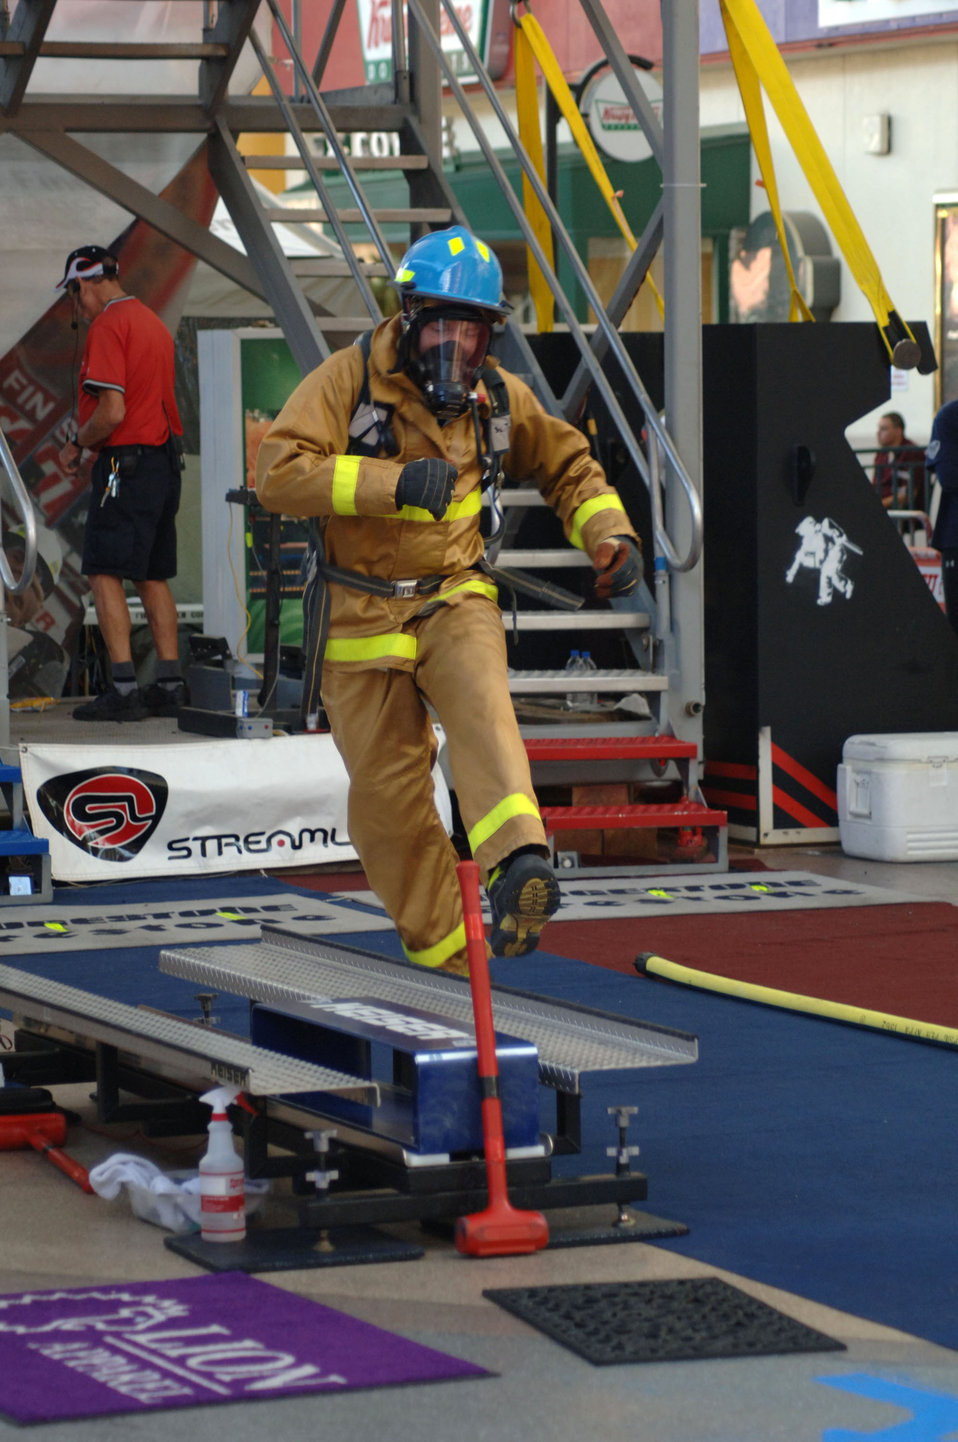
World Firefighter Combat Challenge

Air Force Academy firefighter Lance Gore hops to a Keiser sled to use a 9-pound mallet to drive a 160-pound steel beam a distance of five feet, thereby simulating the effort need to make a forced entry into a burning building. Mr. Gore and his Academy teammates are one of several military firefighter teams competing in the World Firefighter Combat Challenge XVI in Las Vegas.